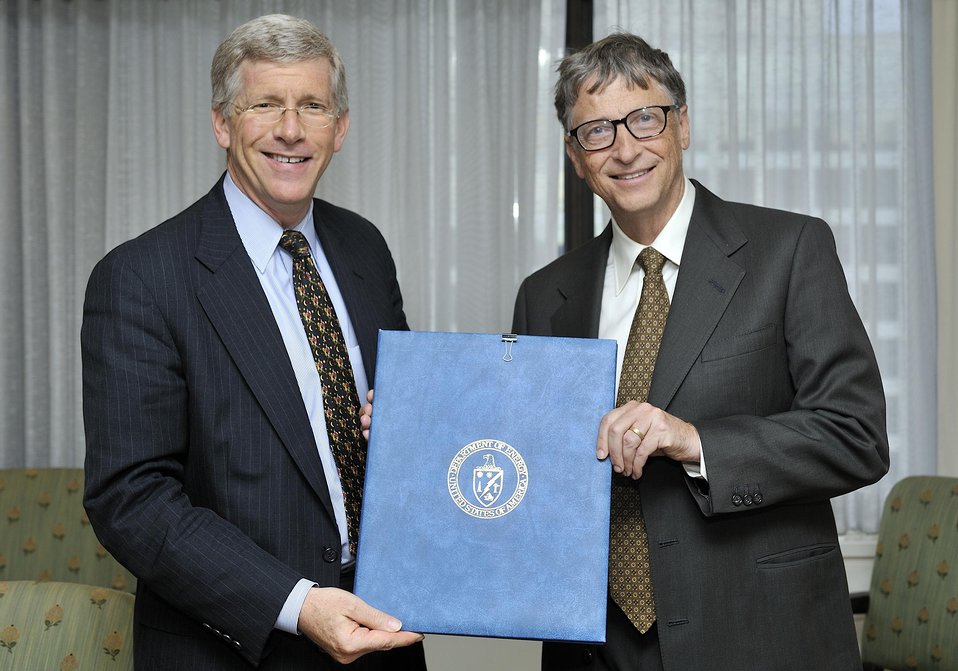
Ken Shipp/DOE Photo